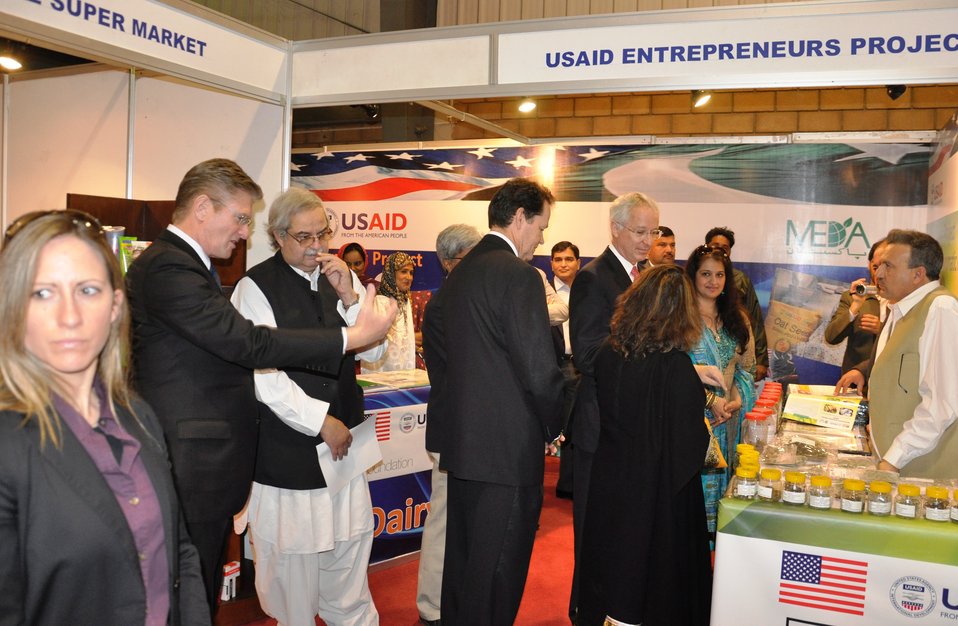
Ambassador Cameron Munter while interacting with the stall holders while visiting the Entrepreneurs stall